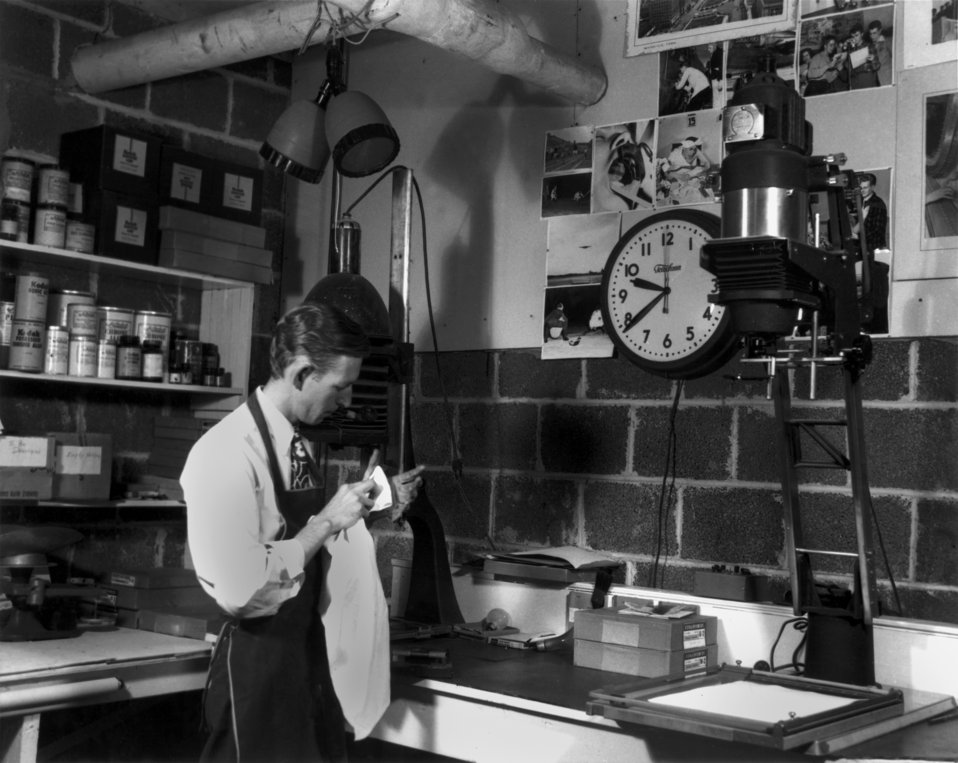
Dark Room/ Ed Westcott Oak Ridge

PRO532 DOE photo
Dark Room/ Ed Westcott Oak Ridge Tennessee 5/4/45